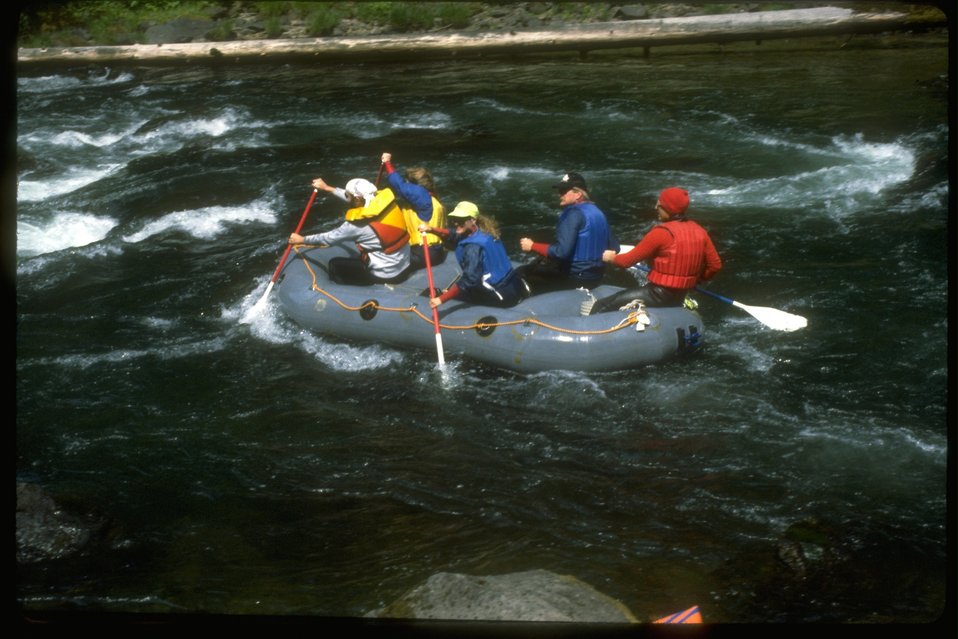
People are rafting on the North Umpqua River.